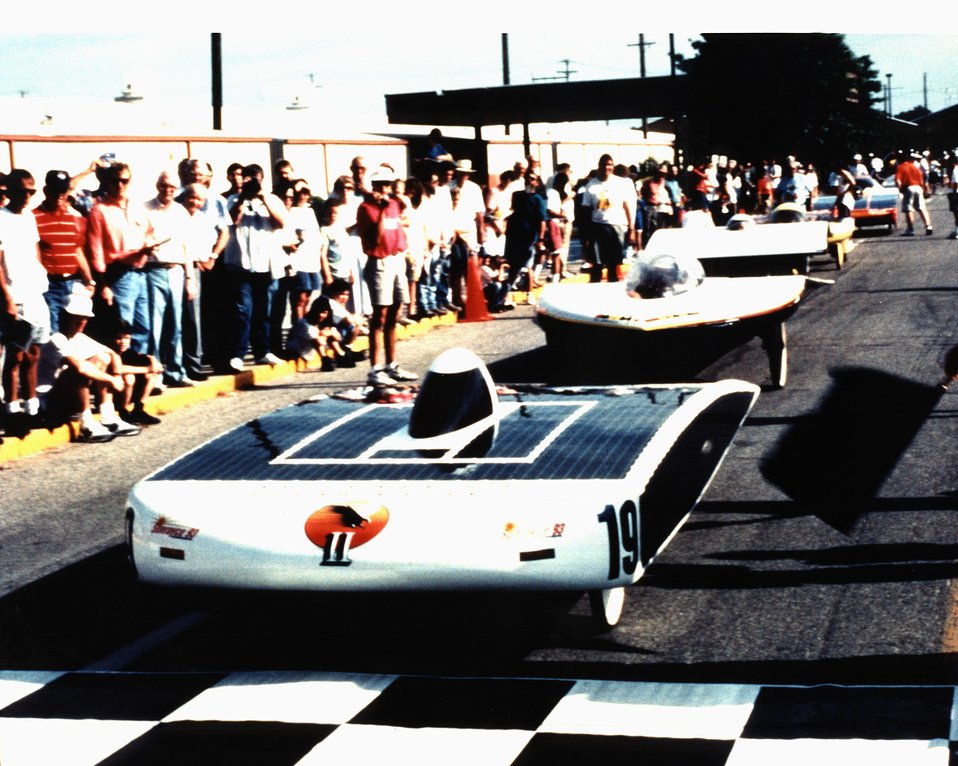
SOLAR EAGLE II FROM CALIFORNIA STATE UNIVERSITY IN LOS ANGELES, CA, SHOWN HERE IN TULSA, OK, WON THIRD PLACE. THE TEAM IS COMPOSED OF STUDENTS, FACULTY AND STAFF.